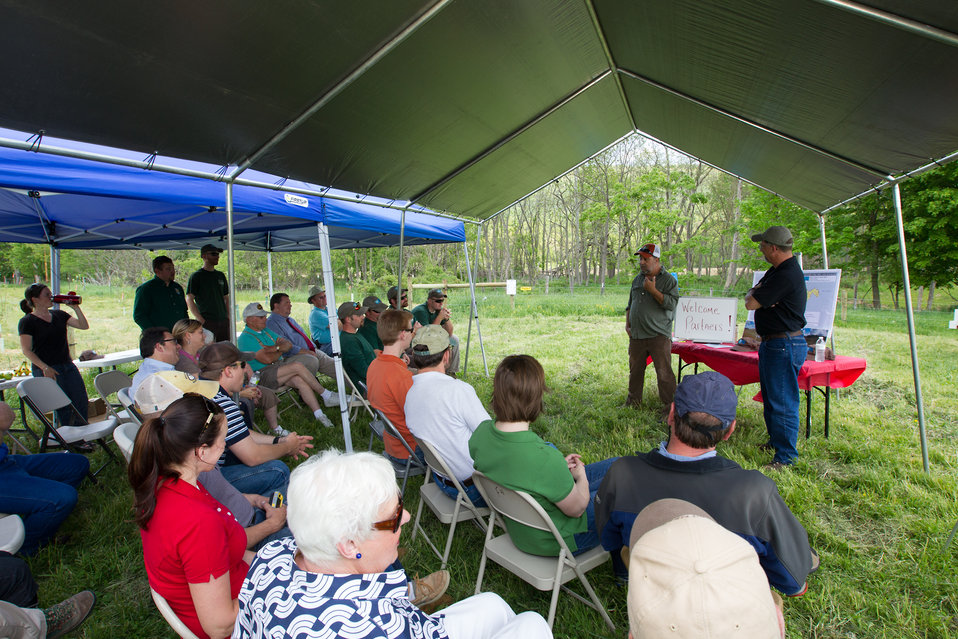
Celebrating 1 Million Feet of Conservation Fence in WV

Partners for Fish and Wildlife Program